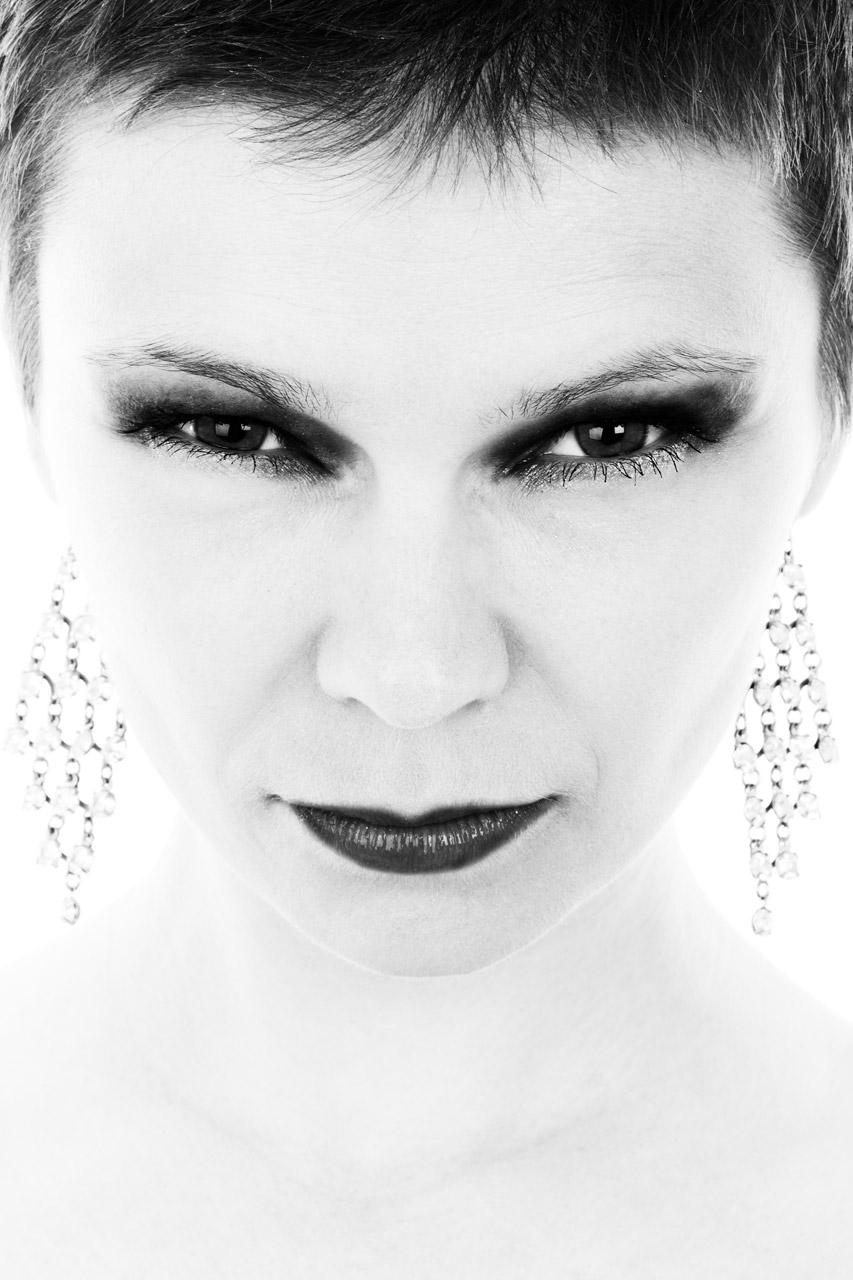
Black and white portrait of a young woman.